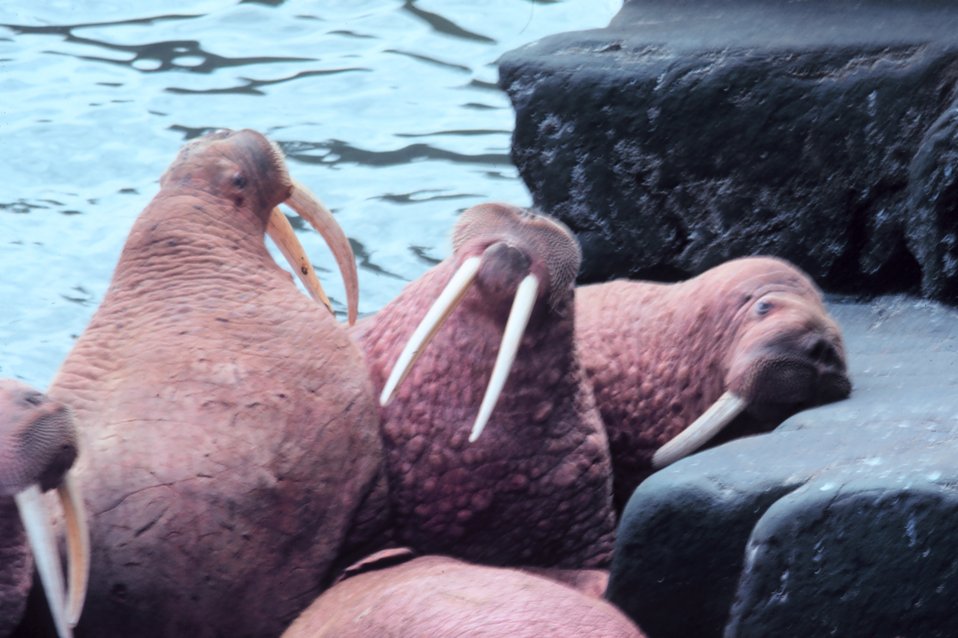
Walrus - Odobenus rosmarus divergens - on Bering Sea island.